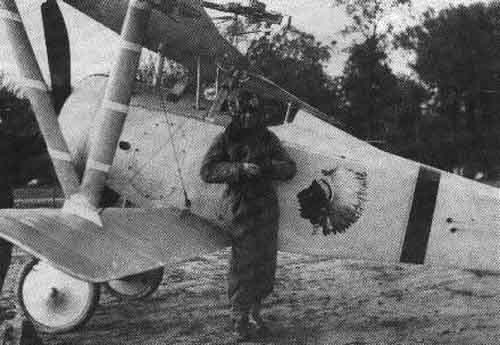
Columbus, Ga., native Eugene Bullard became first African-American combat pilot

Eugene Bullard, known as